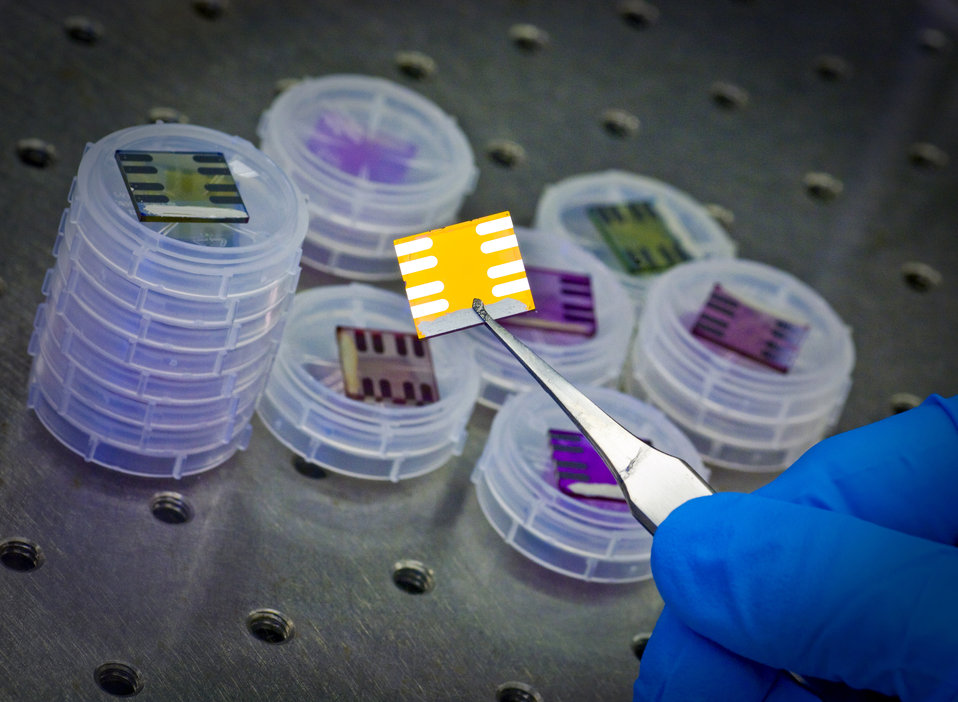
Shown are solar cells at Lawrence Berkeley National Laboratory.